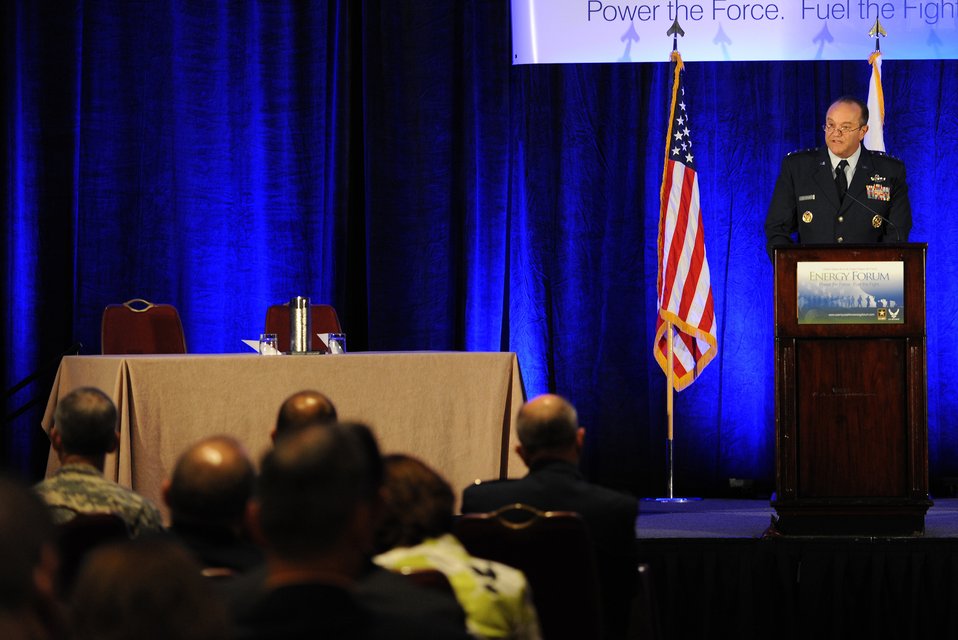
Air Force works to improve energy efficiency

Air Force Vice Chief of Staff Gen. Phil Breedlove speaks on operational energy during the Army-Air Force Energy Forum July 20, 2011, in Arlington, Va. The forum provided an opportunity for attendees to hear the views of and interact with senior leadership from the Department of Defense, federal agencies, Congress and industry regarding the strategic importance and future direction of Army and Air Force energy.